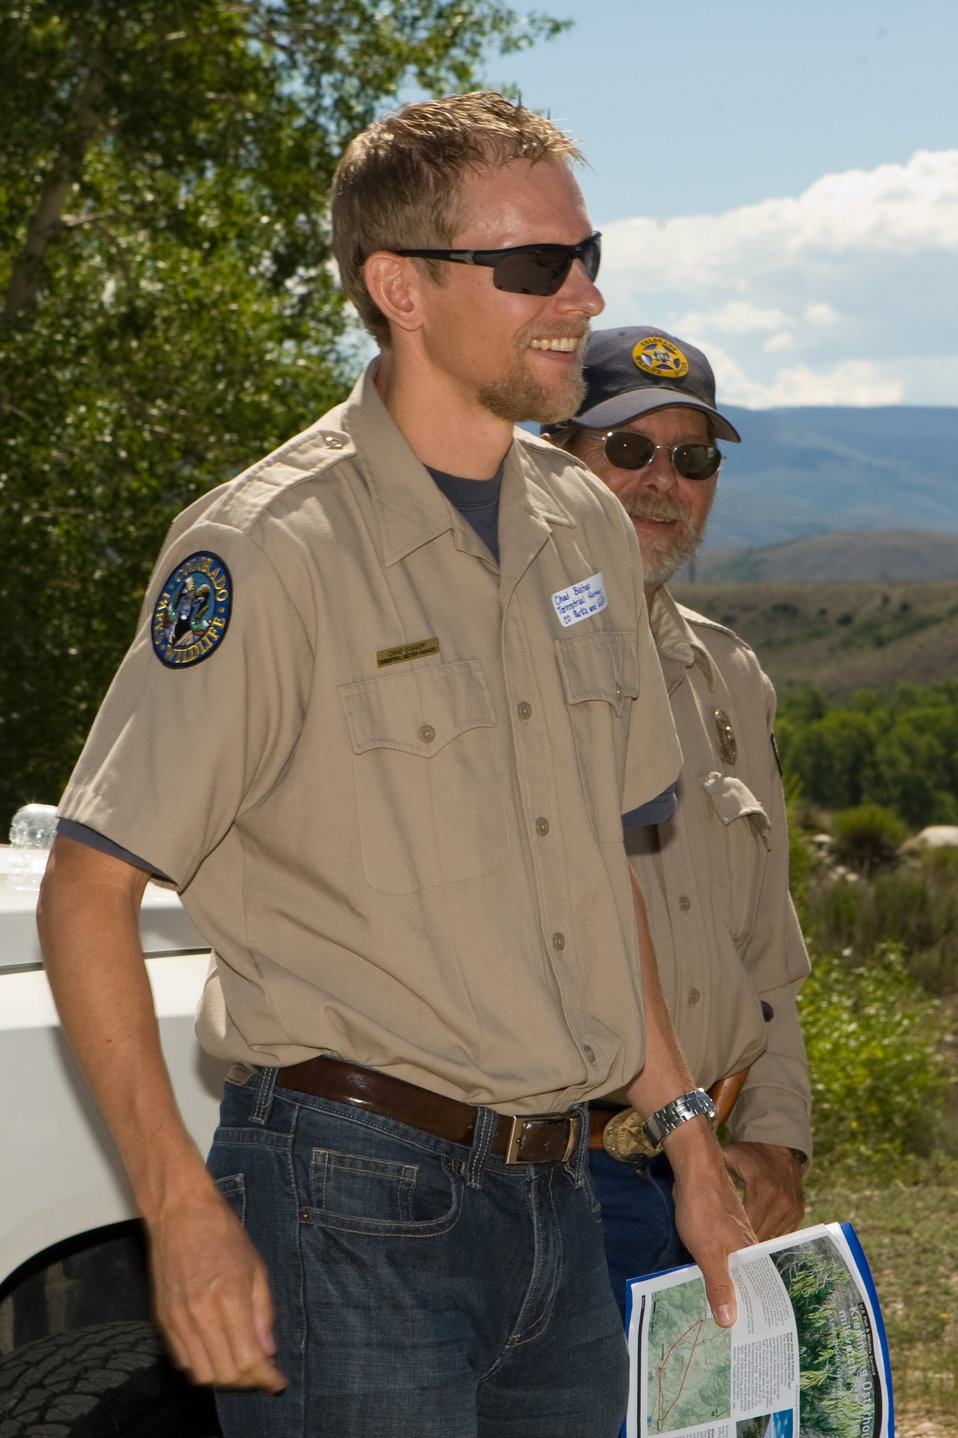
Colorado Rare Plant Conservation Initiative

The Colorado Rare Plant Conservation Initiative (RPCI) is a partnership of 23 statewide and regional agencies, private organizations, and academic institutions working to conserve 121 rare plants in Colorado. As part of these efforts the group developed the Colorado Rare Plant Conservation Strategy, developed Best Management Practices to reduce energy development impacts, addressed climate change, and developed focused strategies for the conservation of individual species at eight priority landscapes. The group has also worked to coordinate volunteer efforts for plant conservation across the state.